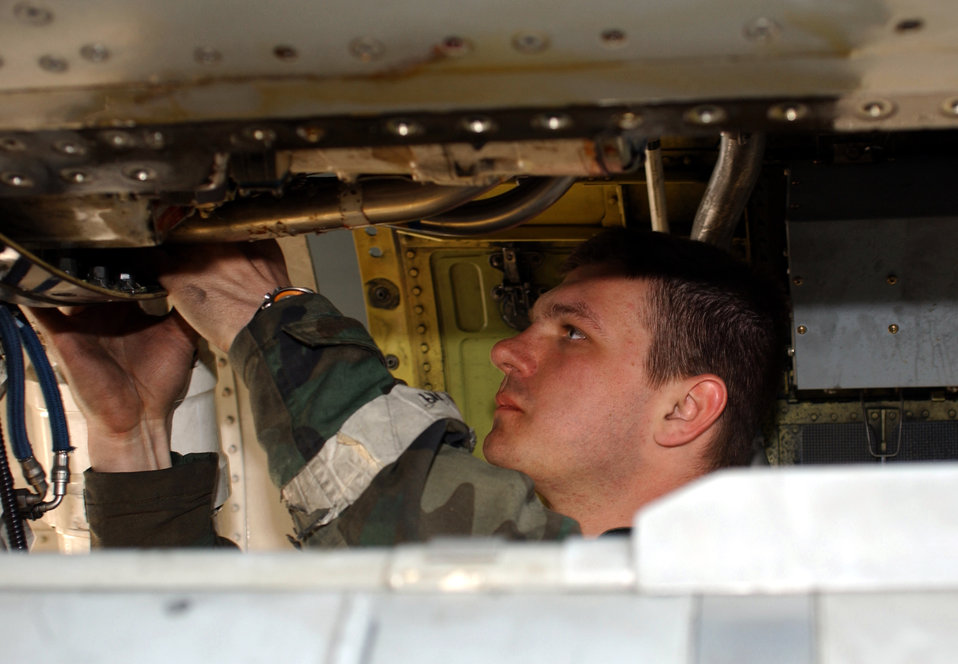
Tune up

EIELSON AIR FORCE BASE, Alaska -- Airman 1st Class Timothy Bonnell performs routine maintenance on an F-16 Fighting Falcon during an operational readiness exercise here April 13. Airman Bonnell is a munitions Airman with the 18th Munitions Squadron.